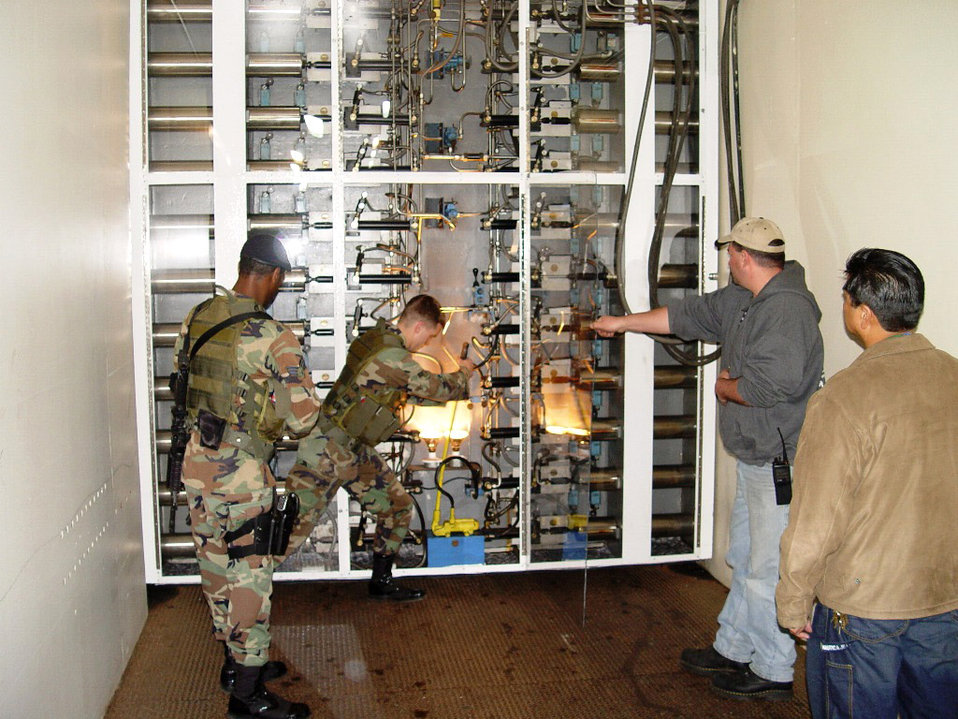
Cheyenne Mountain exercises 'button-up'

Airman 1st Class Derrick Warfield manually locks a 25-ton blast door at Cheyenne Mountain Air Force Station, Colo., during a recent operational readiness inspection. Looking on are Senior Airman Anthony Williams and two contractors from the 721st Mission Support Group civil engineer division. The two Airmen are with the 721st Security Forces Squadron.